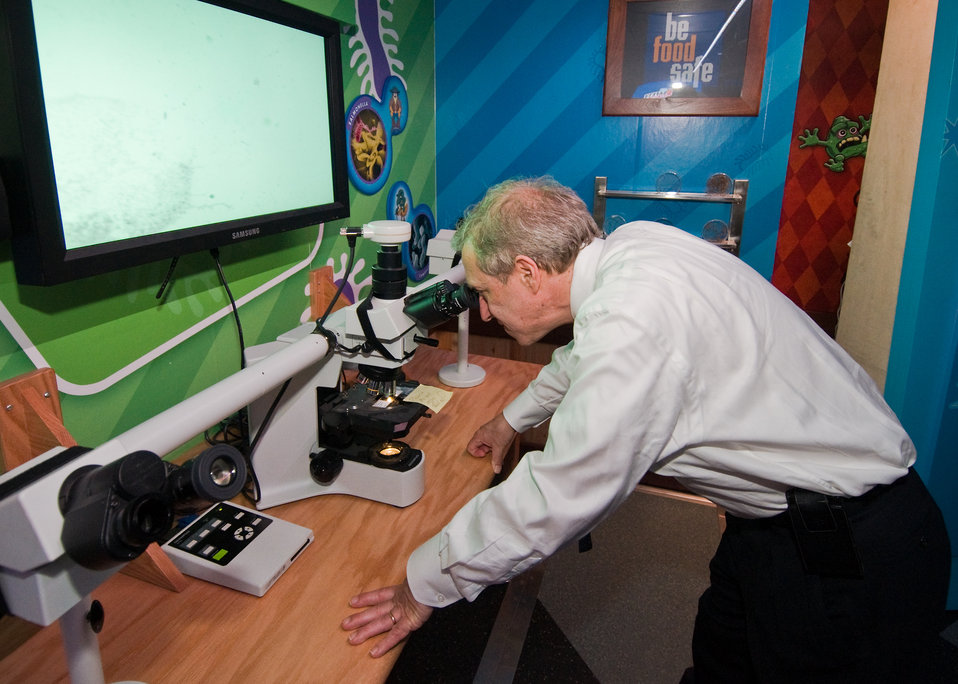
Deputy Undersecretary Food Safety, Food Safety Inspection Service Jerold Mande gets a close look at bacteria at the microscope station in the United States Department of Agriculture Food Safety Inspection Service, Food Safety Discovery Zone during the annual Food Safety Inspection Service “Unity Day” held at the U.S. Department of Agriculture George Washington Carver Center in Beltsville, Maryland on Wednesday, May 26. The Food Safety Discovery Zone is a mobile education center for the FSIS Food Safety Education Staff that travels to schools and civic functions teaching safe food handling. USDA Photo 10di1376-06.